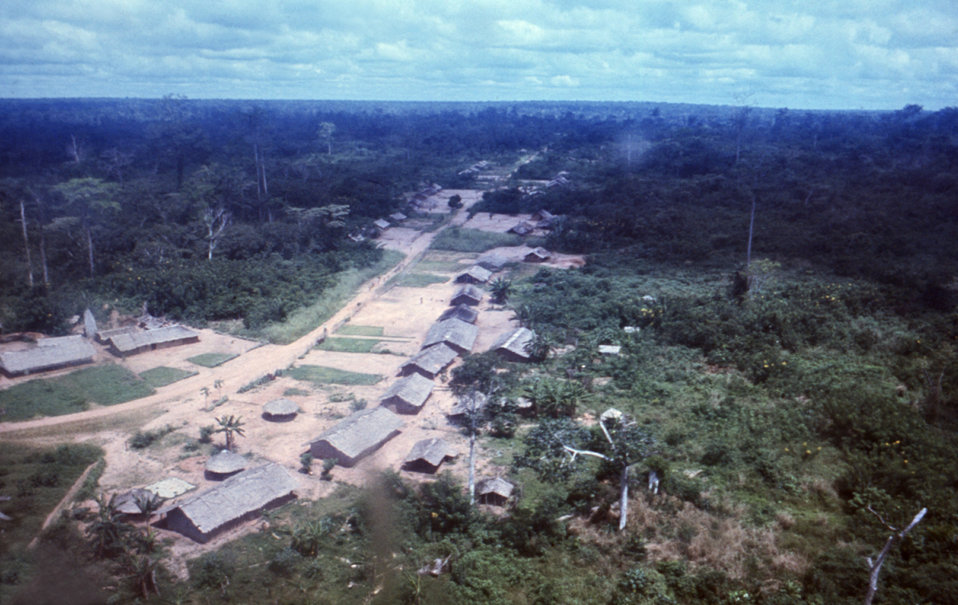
This photograph depicted an aerial view of a village in Zaire where an Ebola investigation had been conducted by CDC EIS officers during outbreaks that took place in northern Zaire during 1976.